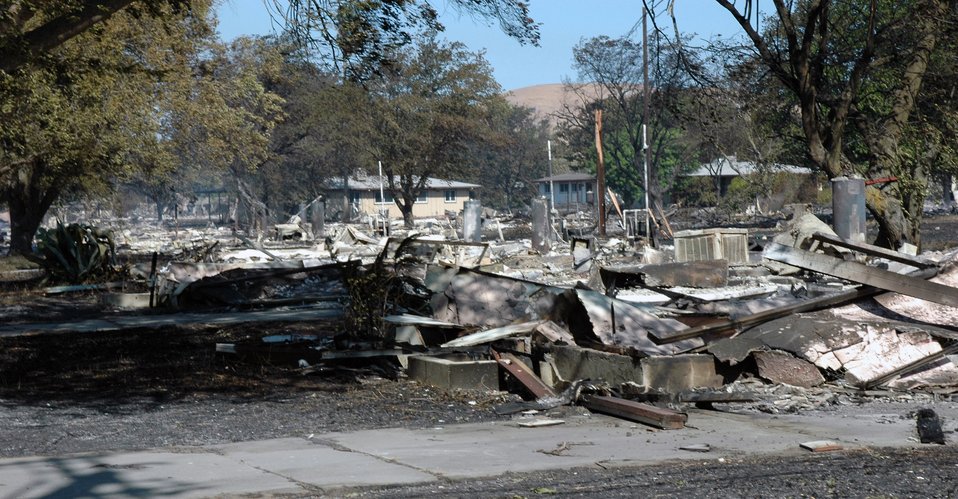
Travis, California firefighters extinguish blaze

An eight-alarm fire destroyed 167 unoccupied housing units and damaged 11 more Aug. 16 at Travis Air Force Base, Calif. Travis AFB emergency personnel, with help from local firefighting and police agencies, contained the fire before it spread to any occupied housing on the base. The destroyed and damaged units were awaiting demolition.